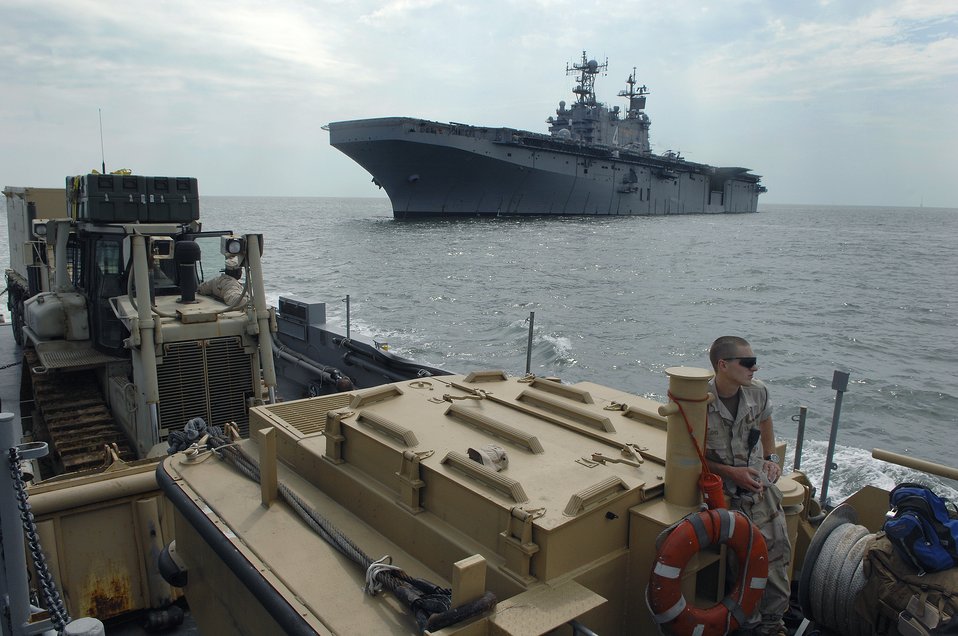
USS Nassau delivers critical help to Galveston

Seaman Apprentice Vincent Jones deploys on a utility landing craft from the amphibious assault ship USS Nassau under way to the beaches of Galveston, Texas to begin disaster relief efforts Sept. 18. The Nassau is anchored off Galveston to provide disaster response and aid to civil authorities as directed in the wake of Hurricane Ike.